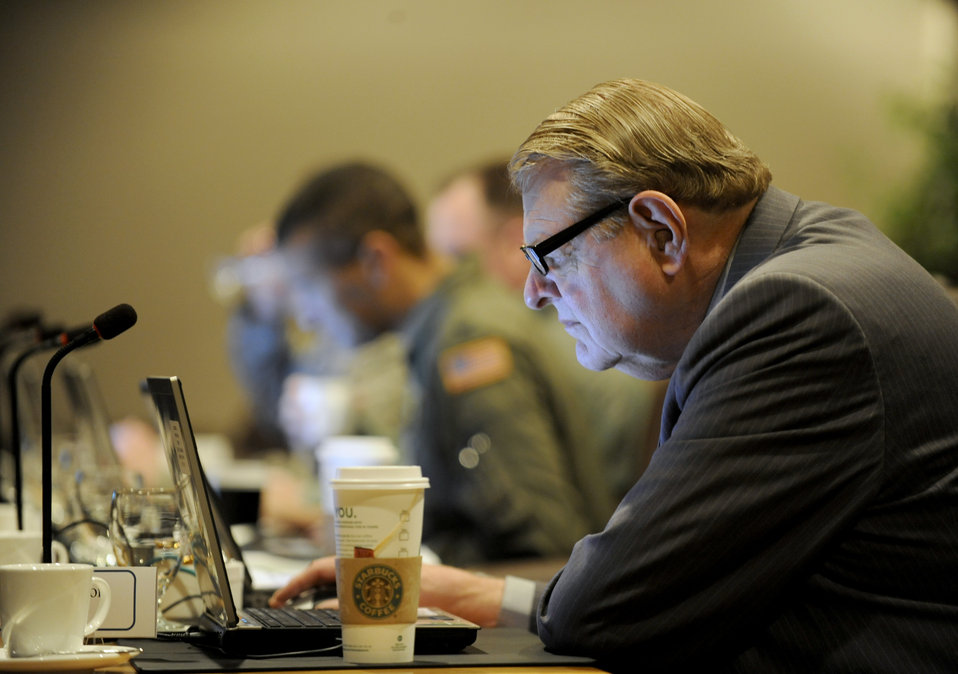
William Davidson, the administrative assistant to the secretary of the Air Force, works on his laptop during the 2011 CORONA TOP. Davidson will retire Sept. 30 after 43 years of Air Force service. He has participated in 39 CORONAs during his career.